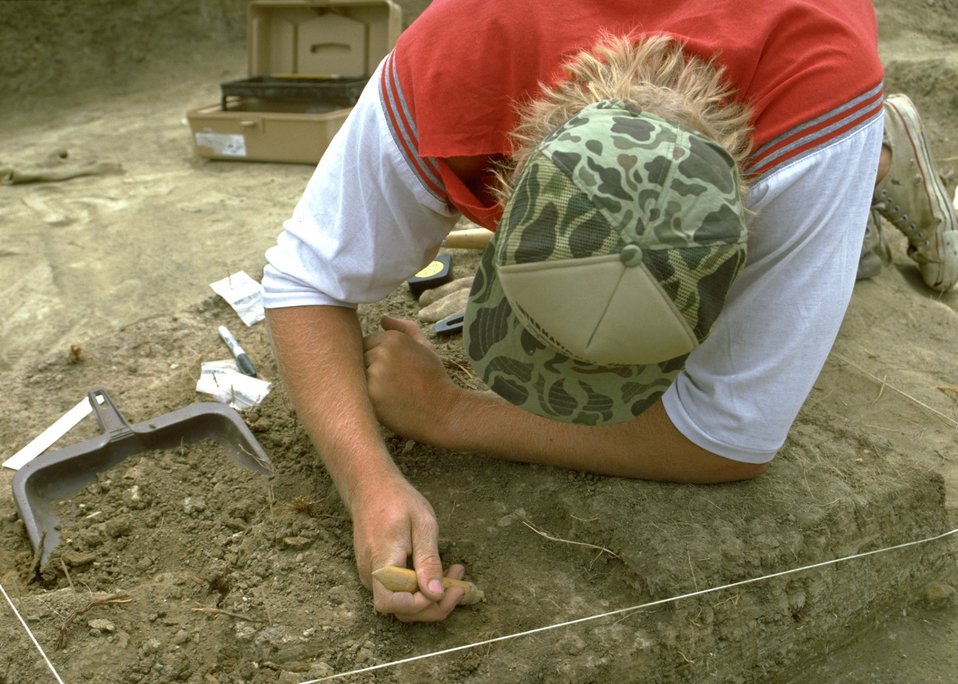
Excavating an unknown area.